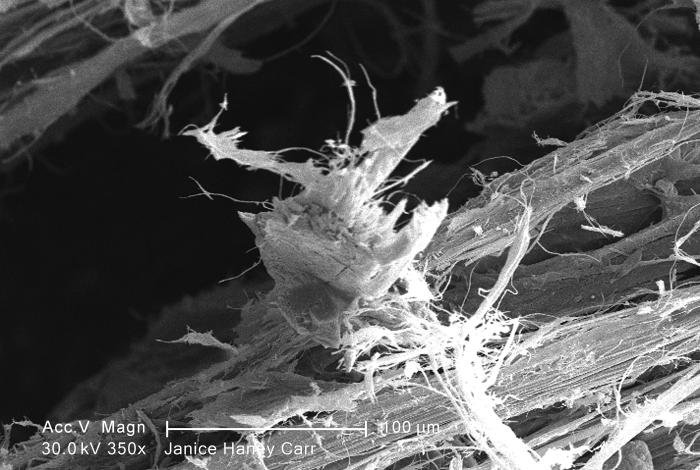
Under a moderate magnification of 650X, this scanning electron micrograph (SEM) revealed some of the microcrystalline ultrastructure exhibited by a piece of raw chrysotile, or white asbestos, which had been excavated from the Lowell Asbestos Mine on Belvidere Mountain, Vermont.